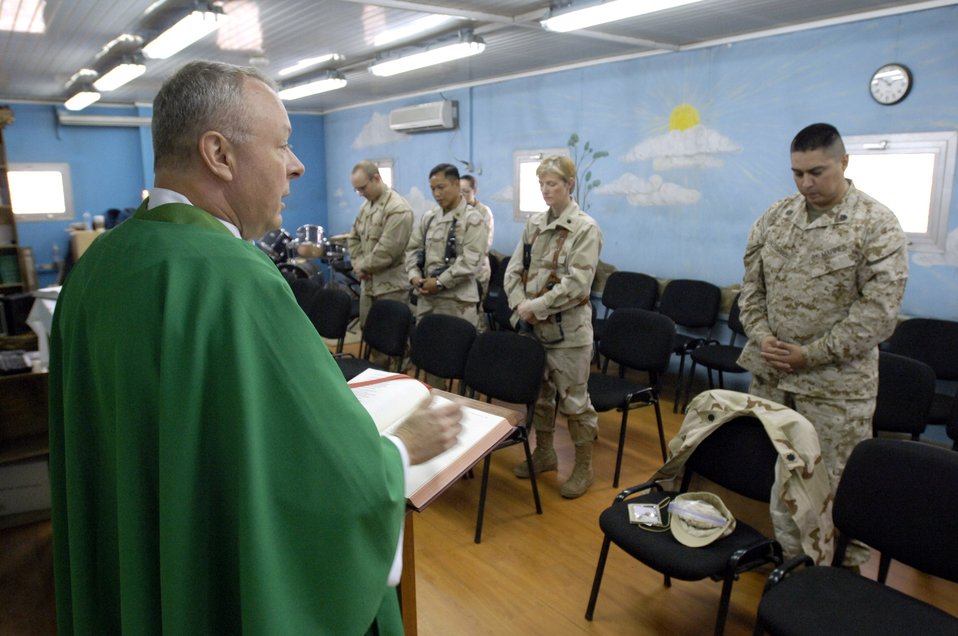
Chaplain shares faith in Afghanistan

Chaplain (Lt. Col.) Michael Weber leads the Catholic daily mass July 23 at Camp Eggers in Kabul, Afghanistan. Besides providing the various chaplain services to the joint military community at Camp Eggers, Chaplain Weber also serves as a mentor to the Afghan Religious and Cultural Affairs officers, who are the Afghan equivalent to U.S. military chaplains. Chaplain Weber is deployed from Hickam Air Force Base, Hawaii.